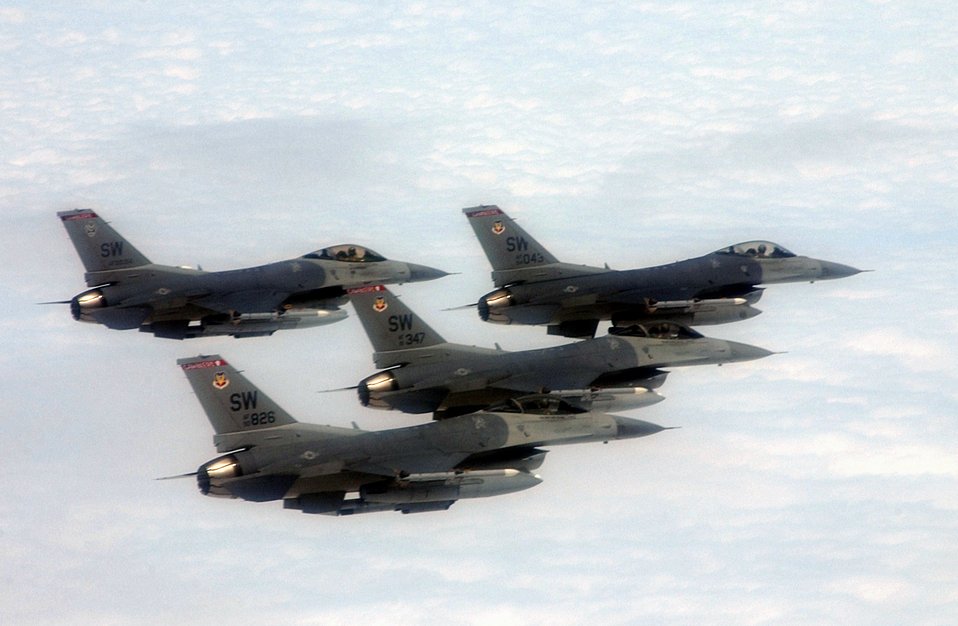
Forming up

SHAW AIR FORCE BASE, S.C. - A formation of F-16s from the 77th Fighter Squadron flies to Arlington National Cemetery to perform a fly-by May 3.